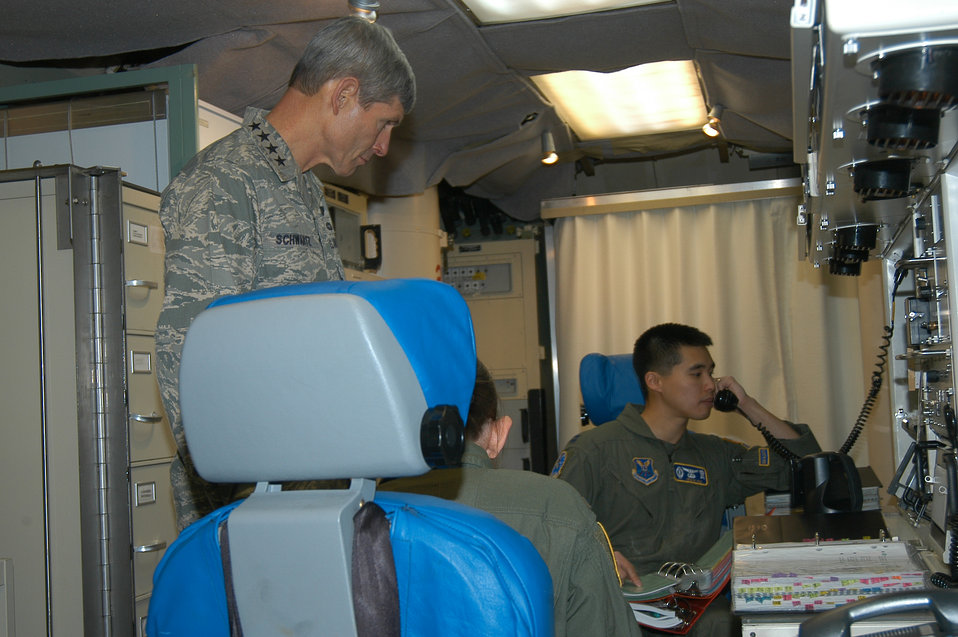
CSAF visit

Capt. Irwin Hui (right) and 1st Lt. Sydney Todorov, missile combat crewmembers with the 320th Missile Squadron at F.E. Warren Air Force Base, Wyo., brief Air Force Chief of Staff Gen. Norton Schwartz Dec. 25, 2009, inside the launch control center of a missile alert facility. The general and Mrs. Schwartz visited the base during Christmas to thank Airmen in 24-hour work centers and to reinforce the Air Force's commitment to the nuclear enterprise.